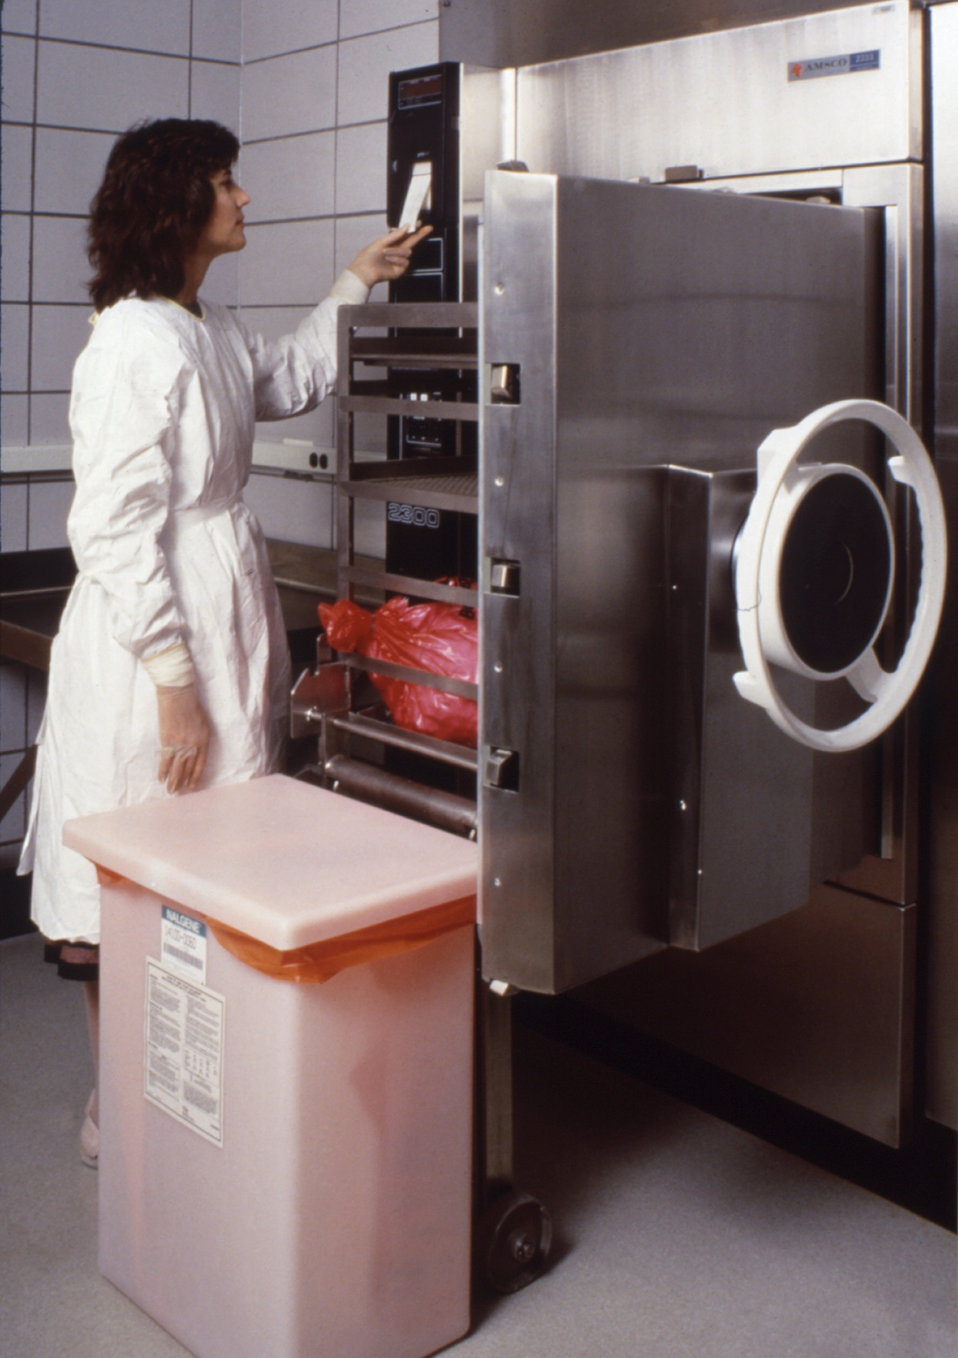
This CDC laboratory worker is shown here working with an early model autoclave system.